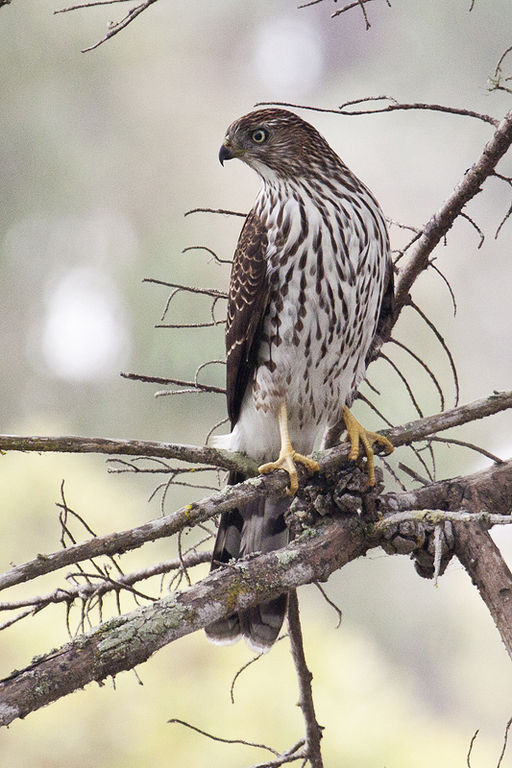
Cooper's hawk